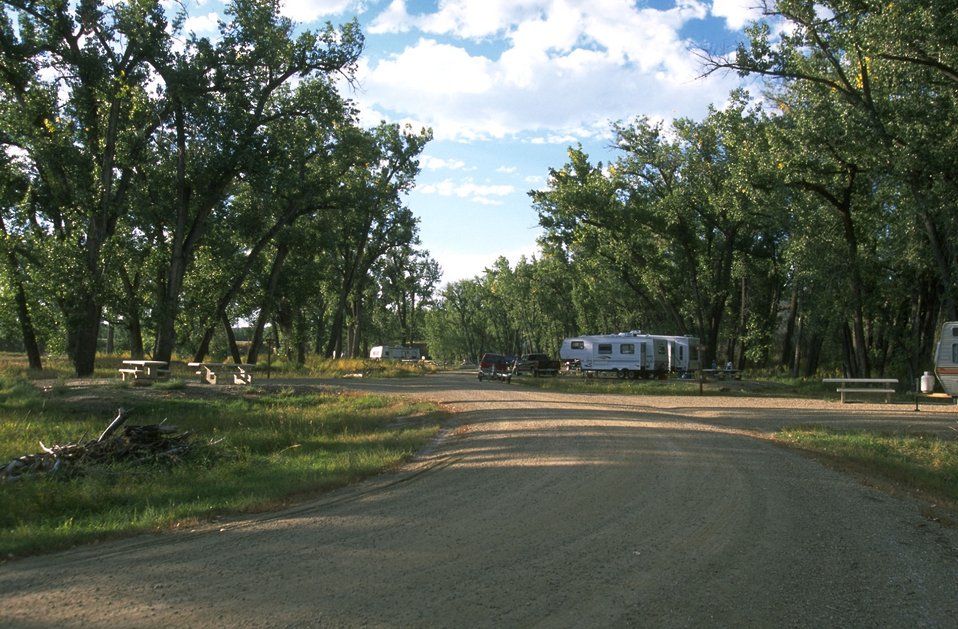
Kipp Recreation Area